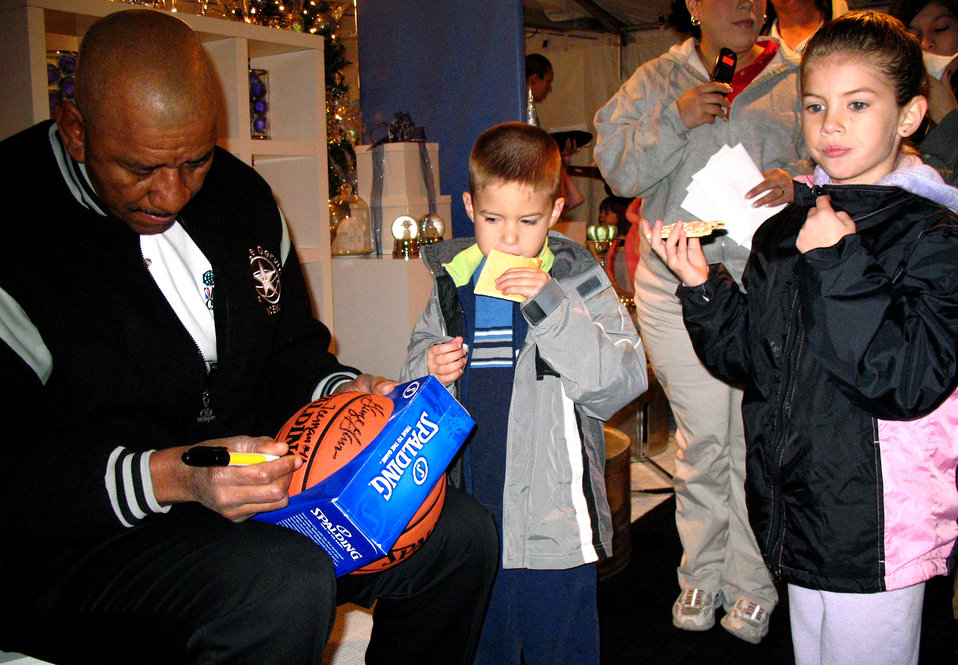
Operation Christmas

George Gervin signs a basketball for Carli and Blake Green during Operation Christmas Dec. 13 at the Texas National Guard Armory in San Antonio. Operation Christmas is an outreach program designed to show support to military families during the holiday season. Mr. Gervin is a retired San Antonio Spurs guard, and was named one of the NBA's top 50 players of all-time.